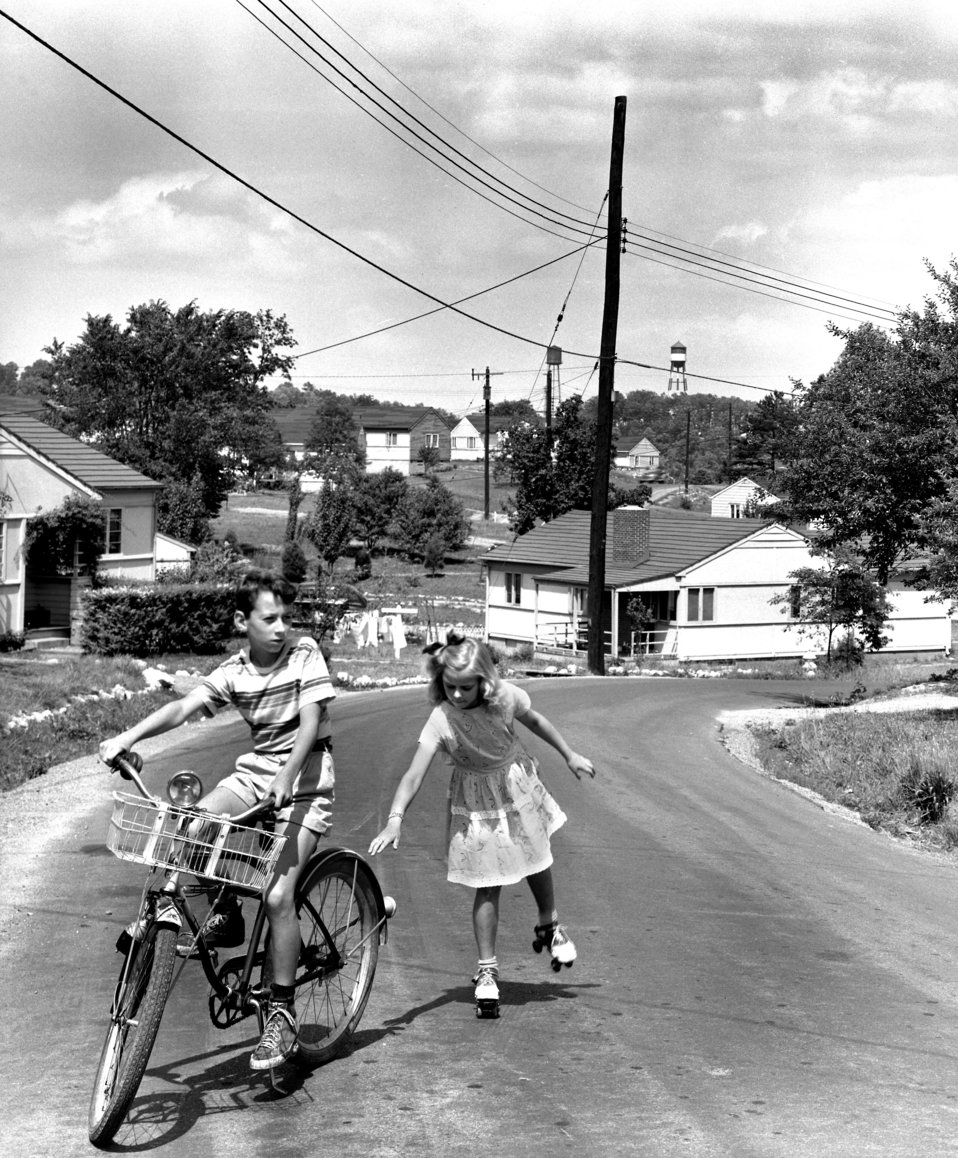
Children at Play on the Street in Oak Ridge 1948

5105a DOE photo Ed Westcott May 1948 Oak Ridge Tennessee